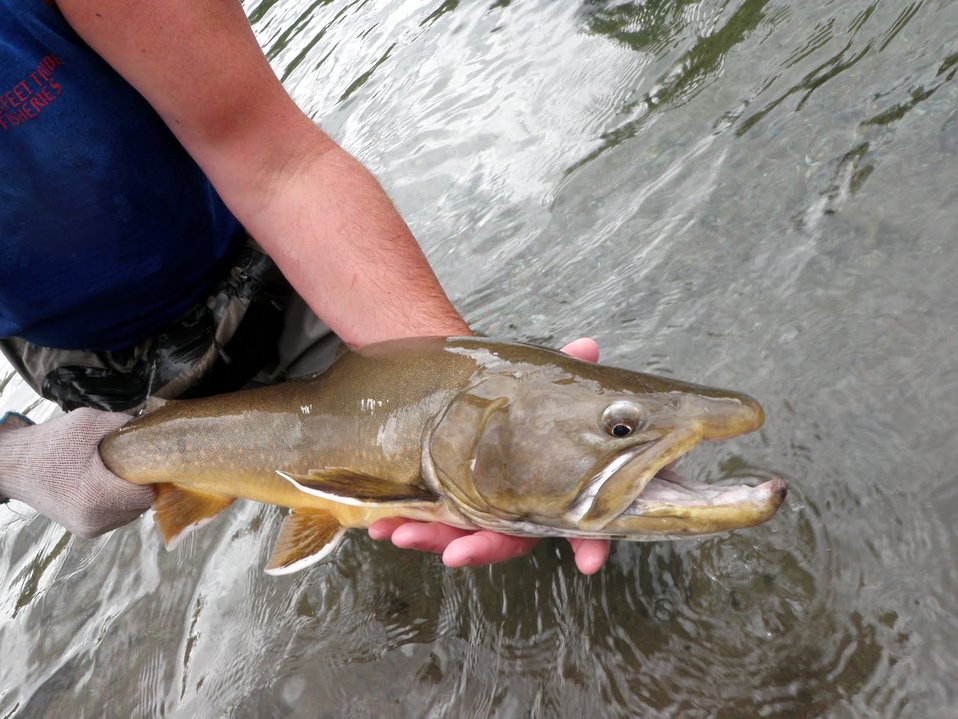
Bull Trout

The Bull trout were then released back into the wild.